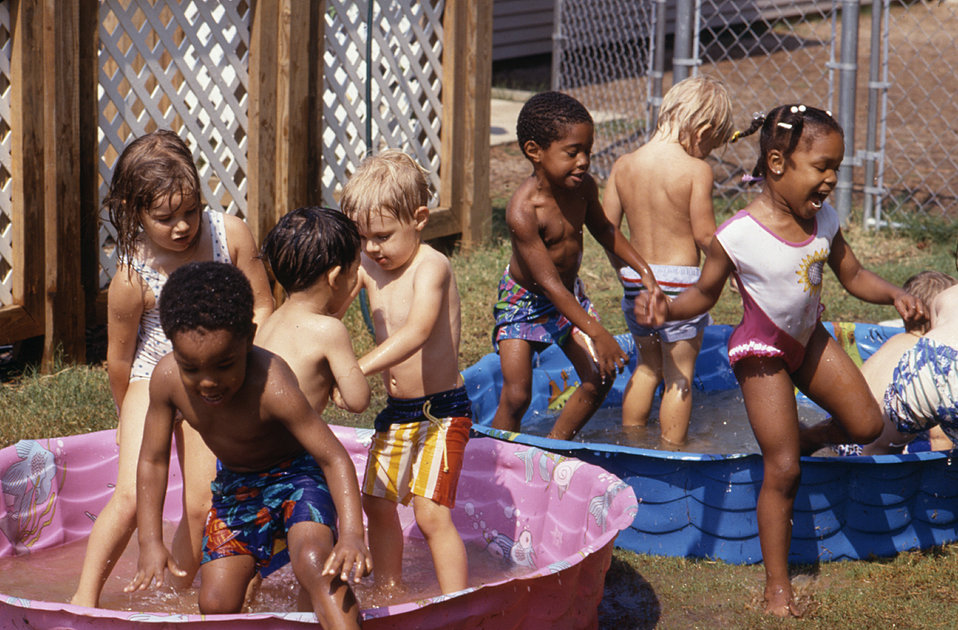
This early 1990s photograph shows children playing in wading pools in a neighborhood recreation center.